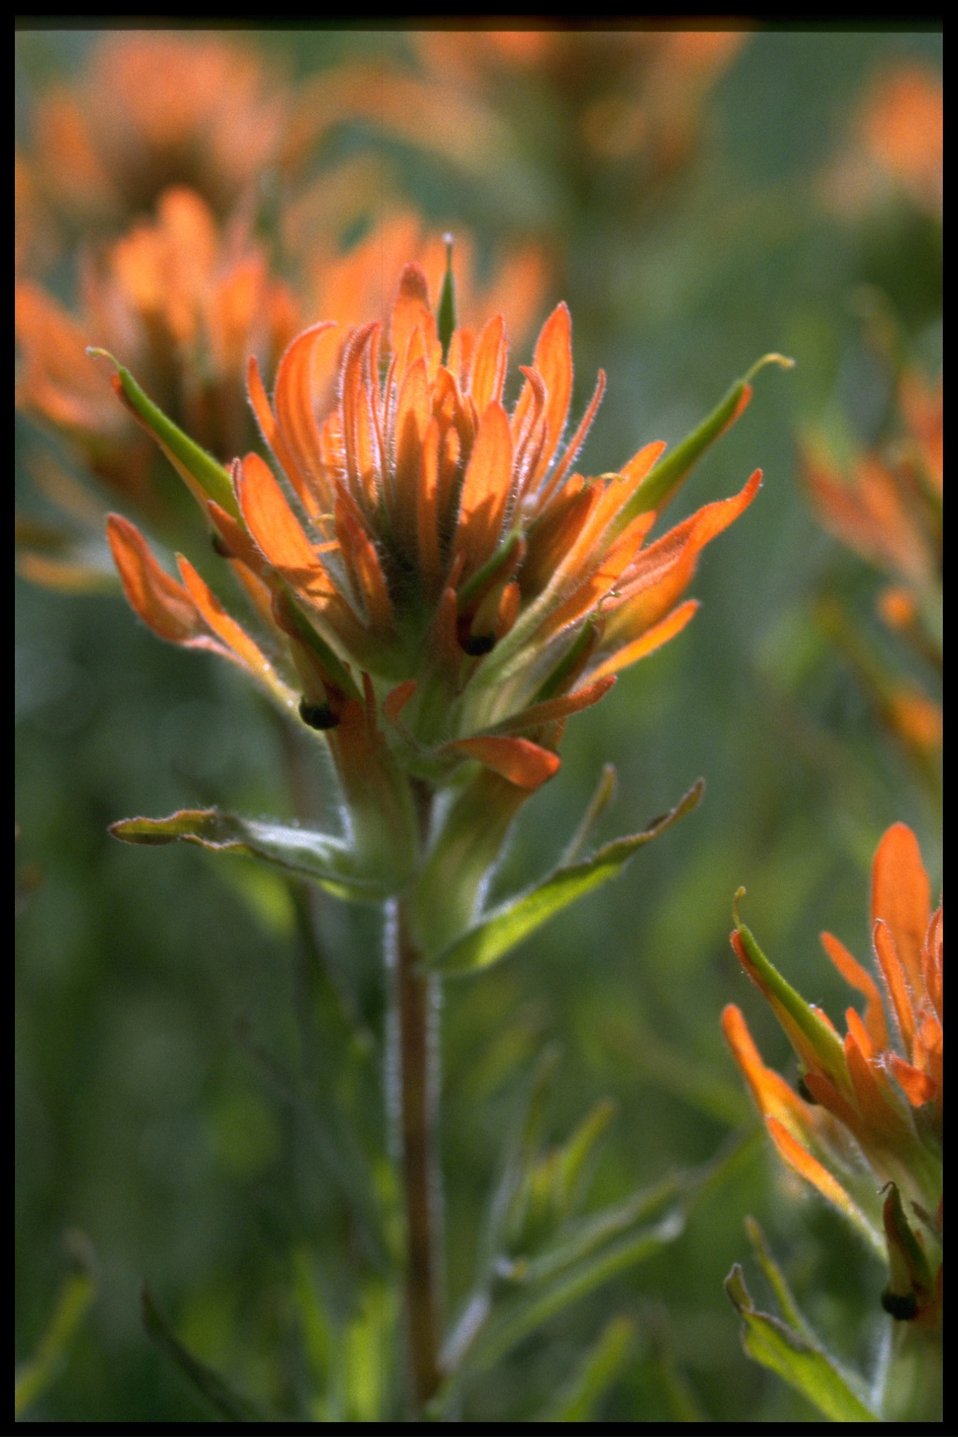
Closeup shot of Indian Paintbrush wildflower.